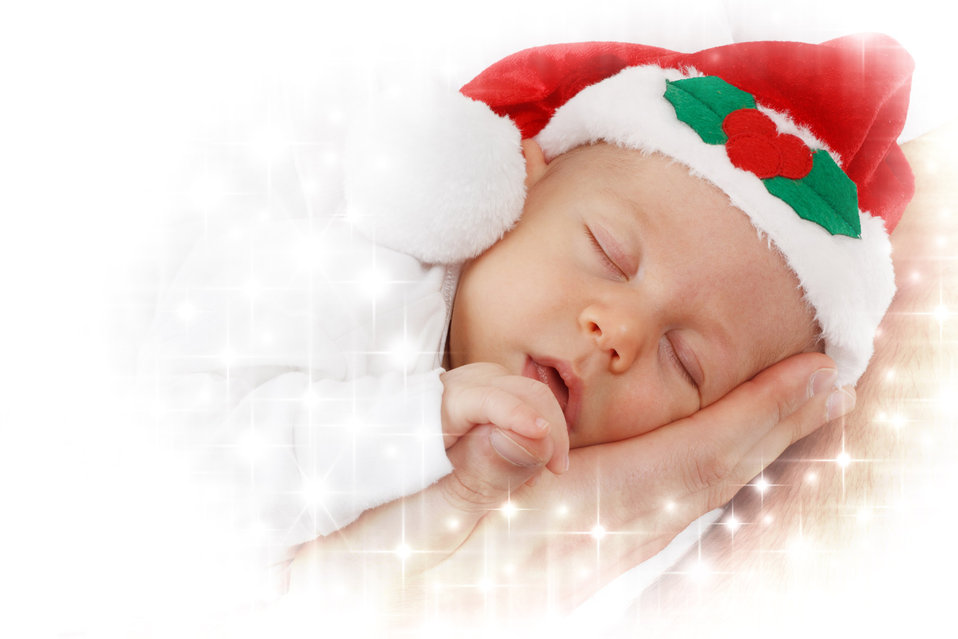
Christmas baby boy

Baby boy in santa's hat sleeping.